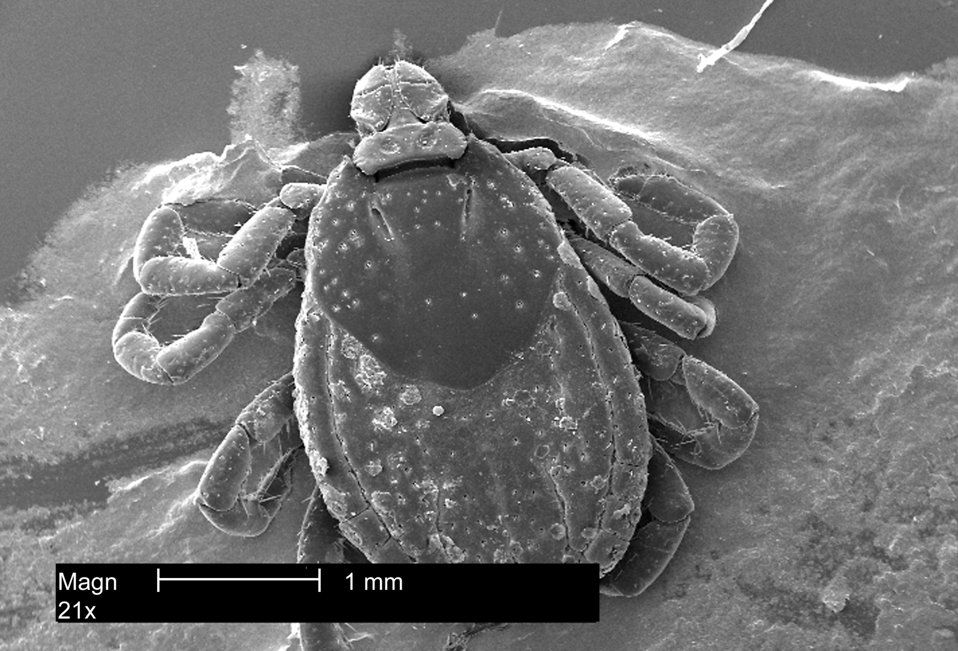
Dorsal view of an American Dog Tick, Dermacentor variabilis, magnified 21x.